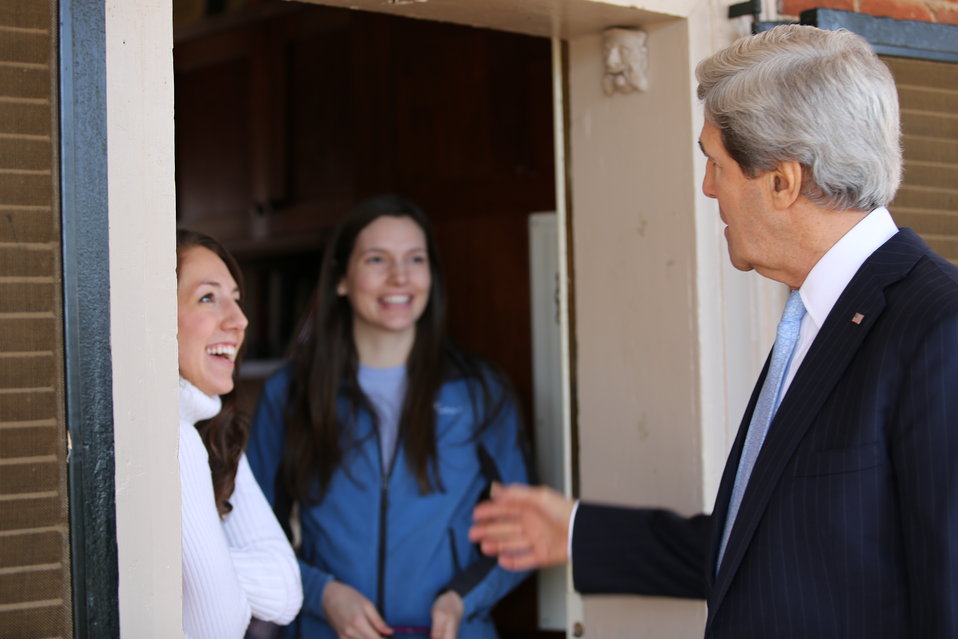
Secretary Kerry Meets With UVA Students

U.S. Secretary of State John Kerry meets with students at the University of Virginia in Charlottesville, Virginia, February 20, 2013.